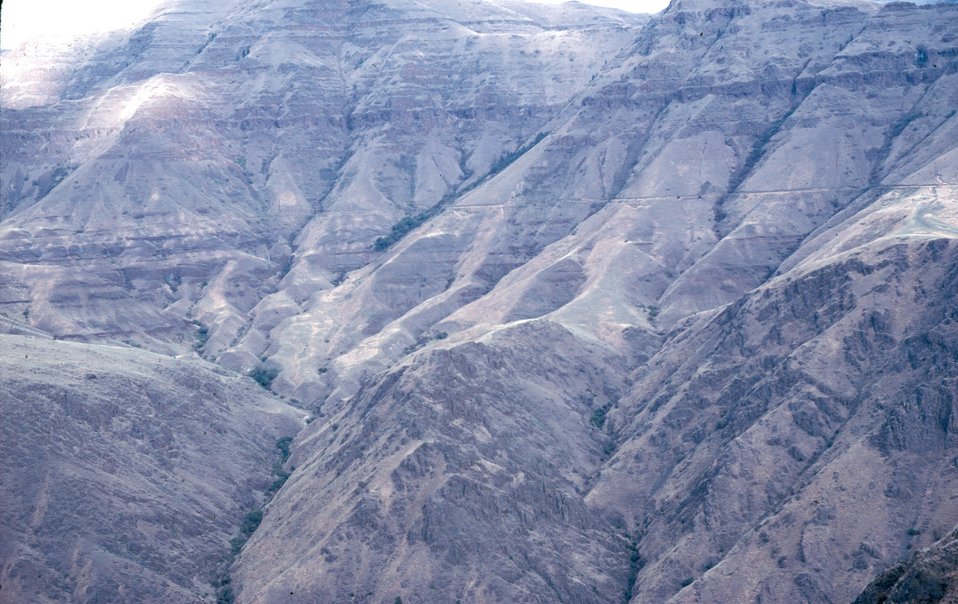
Columbia River Basalt Four Rivers LSRD Lower Snake River District